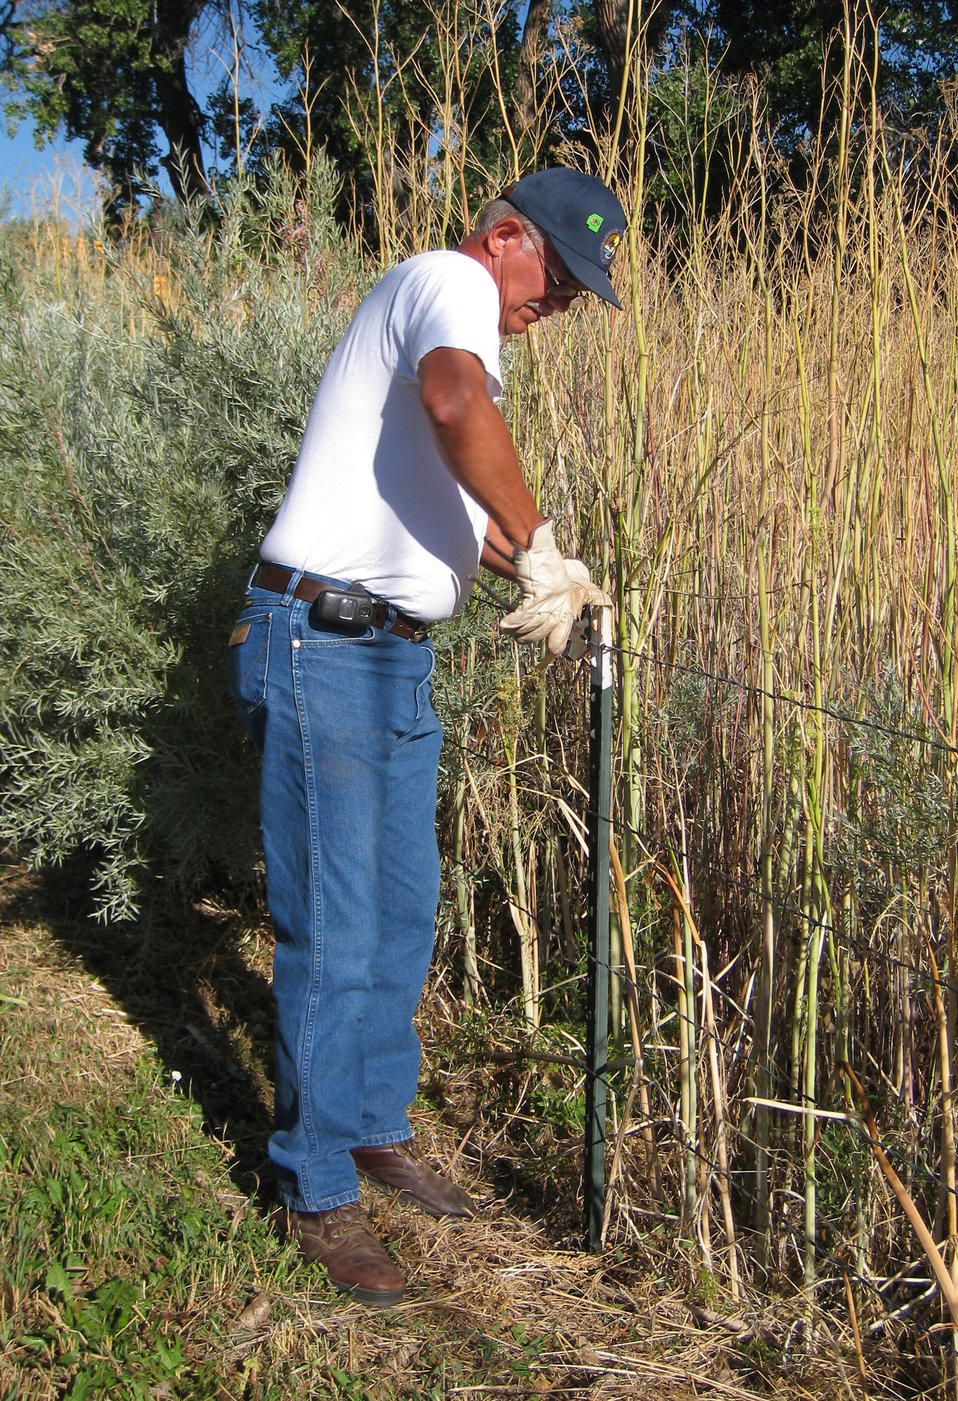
Two Ponds Tuesday Fence Repair